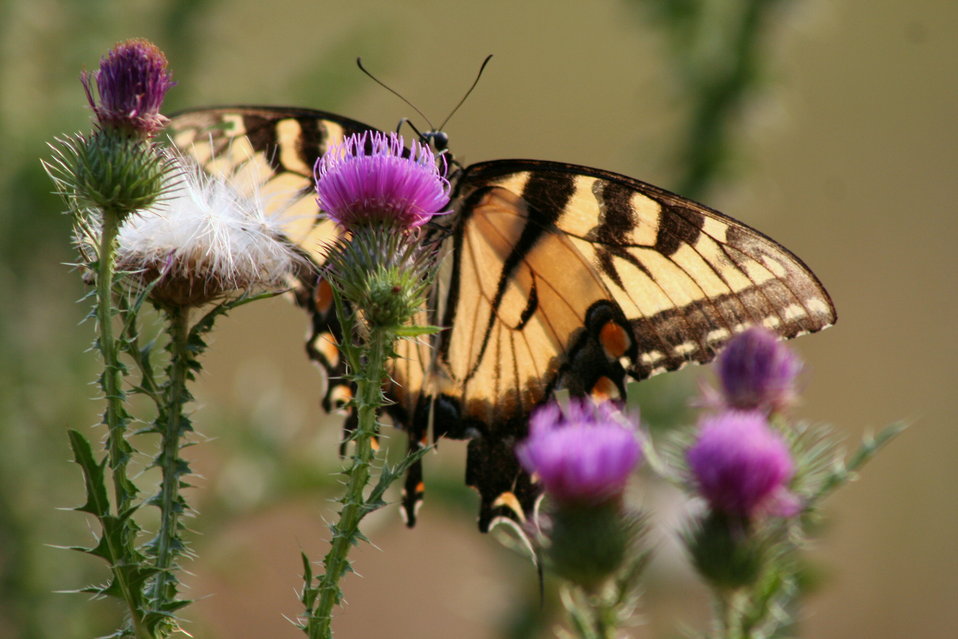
Tiger swallowtail on a thistle.